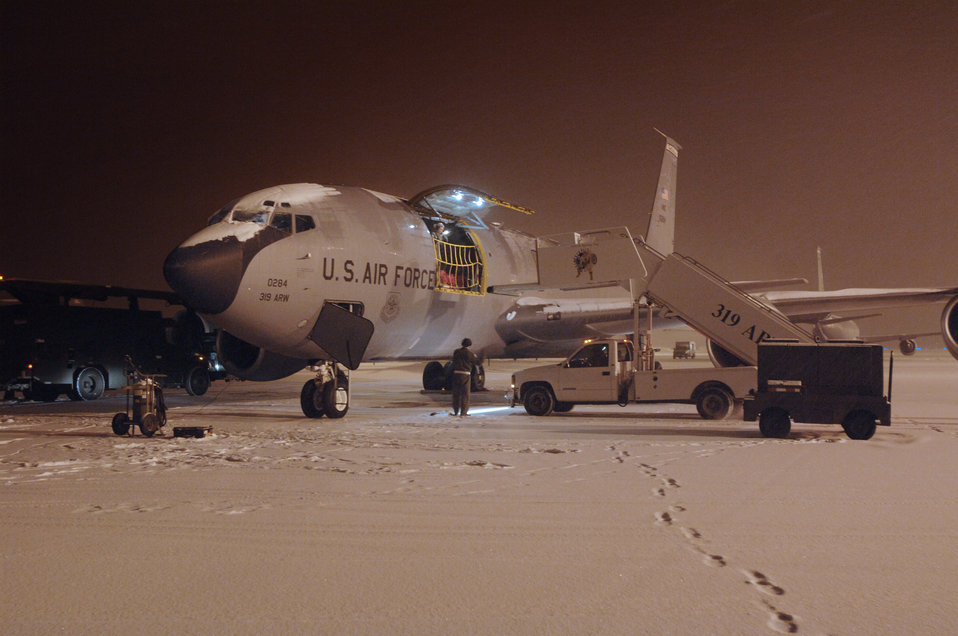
Preparing for a busy day

A KC-135 Stratotanker at Grand Forks Air Force Base, N.D., is readied for a refueling mission Feb. 4. The tanker's aircrew will be refueling a B-2 Spirit bomber later in the day.